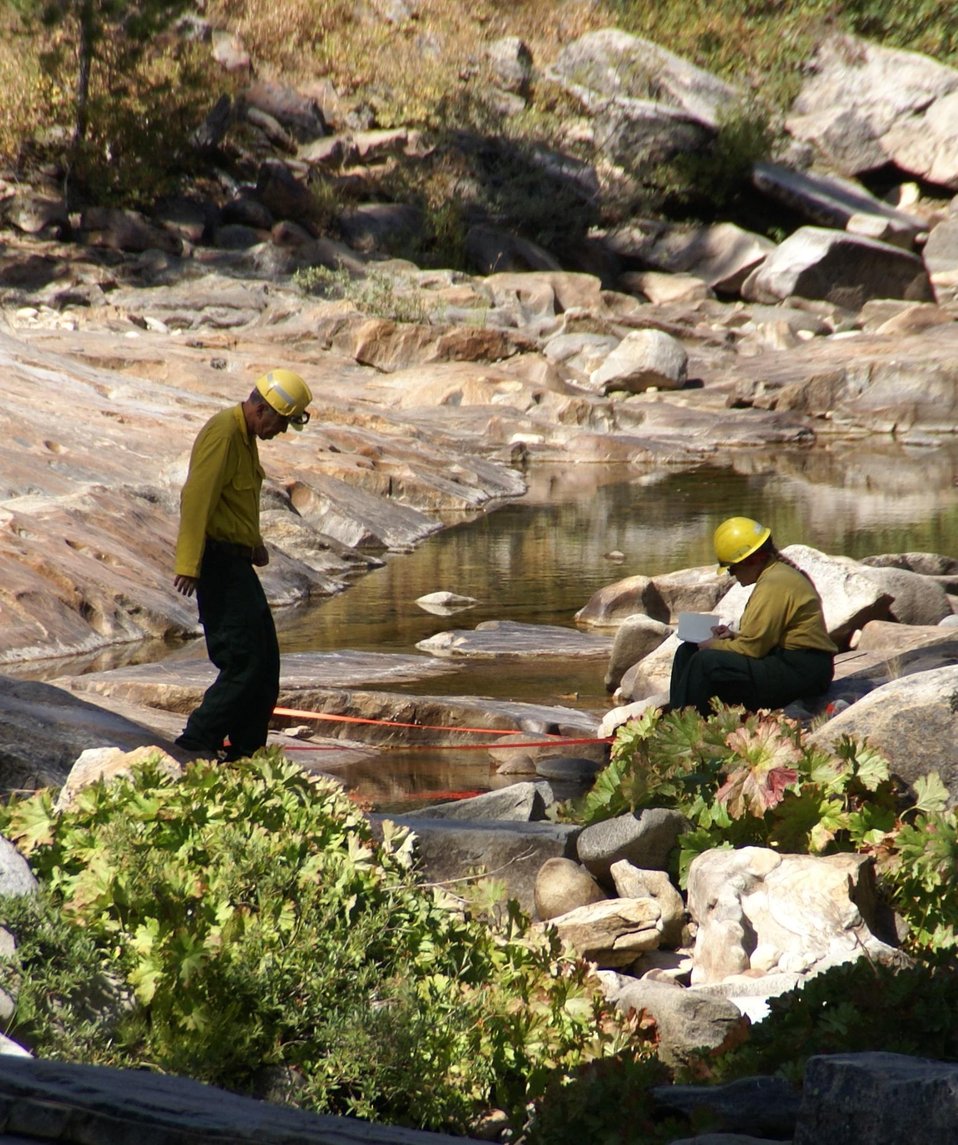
Burned Area Emergency Response (BAER) specialists Barry Hill and Mary Flores measure stream flow to ensure sufficient flow in the Clavey River for the protection of fish habitat after the Rim Fire. BAER is a rapid assessment of burned watersheds by a BAER team to identify imminent post-wildfire threats to human life and safety property and critical natural or cultural resources on National Forest System lands and take immediate actions to implement emergency stabilization measures before the first major storms. Fires result in loss of vegetation exposure of soil to erosion and increased water runoff that may lead to flooding increased sediment debris flows and damage to critical natural and cultural resources. BAER team members implement seeding and mulching installation to prevent erosion, erect temporary water run-off control structures that will protect recovering areas, and installation of warning signs, replace safety related facilities, remove safety hazards, prevent permanent loss of habitat for threatened and endangered species, and prevent the spread of noxious weeds and protect critical cultural resources. The Rim Fire in the Stanislaus National Forest near in California began on Aug. 17, 2013 and is under investigation. The fire has consumed approximately 256,169 acres and is 84% contained.